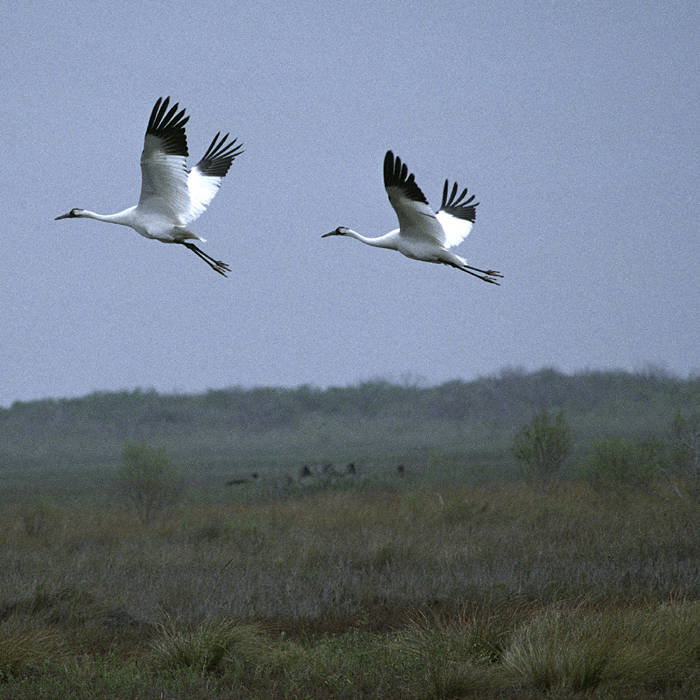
whooping cranes

Aransas National Wildlife Refuge, TX